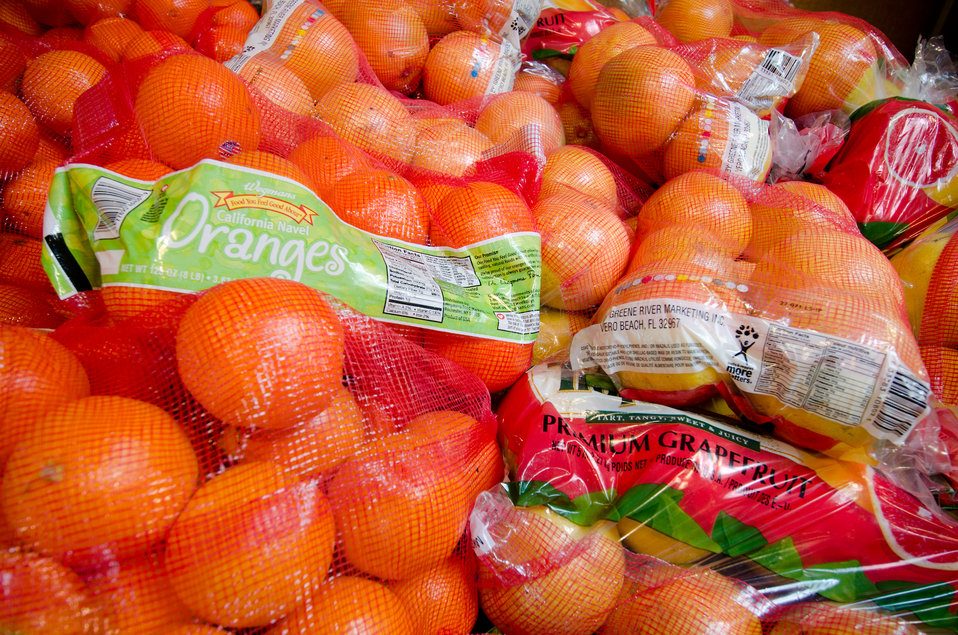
Bags of orange and grapefruit at a grocery store in Fairfax, Virginia, on March 3, 2011.